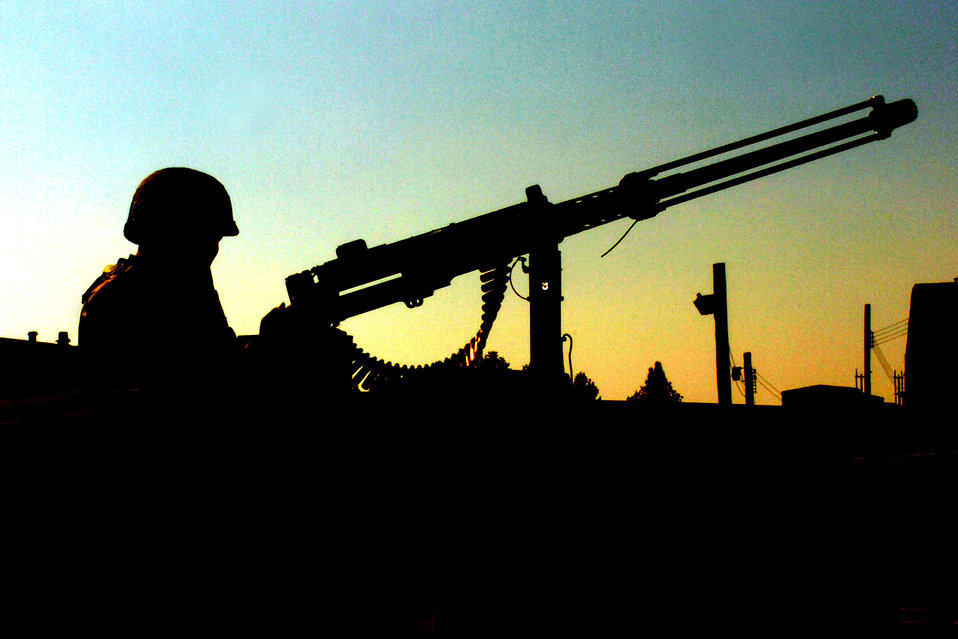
Beverly Bulldog 0404

OSAN AIR BASE, South Korea -- An Airman from the 51st Fighter Wing Security Forces Squadron prepares for a simulated attack during an exercise here Oct. 28.